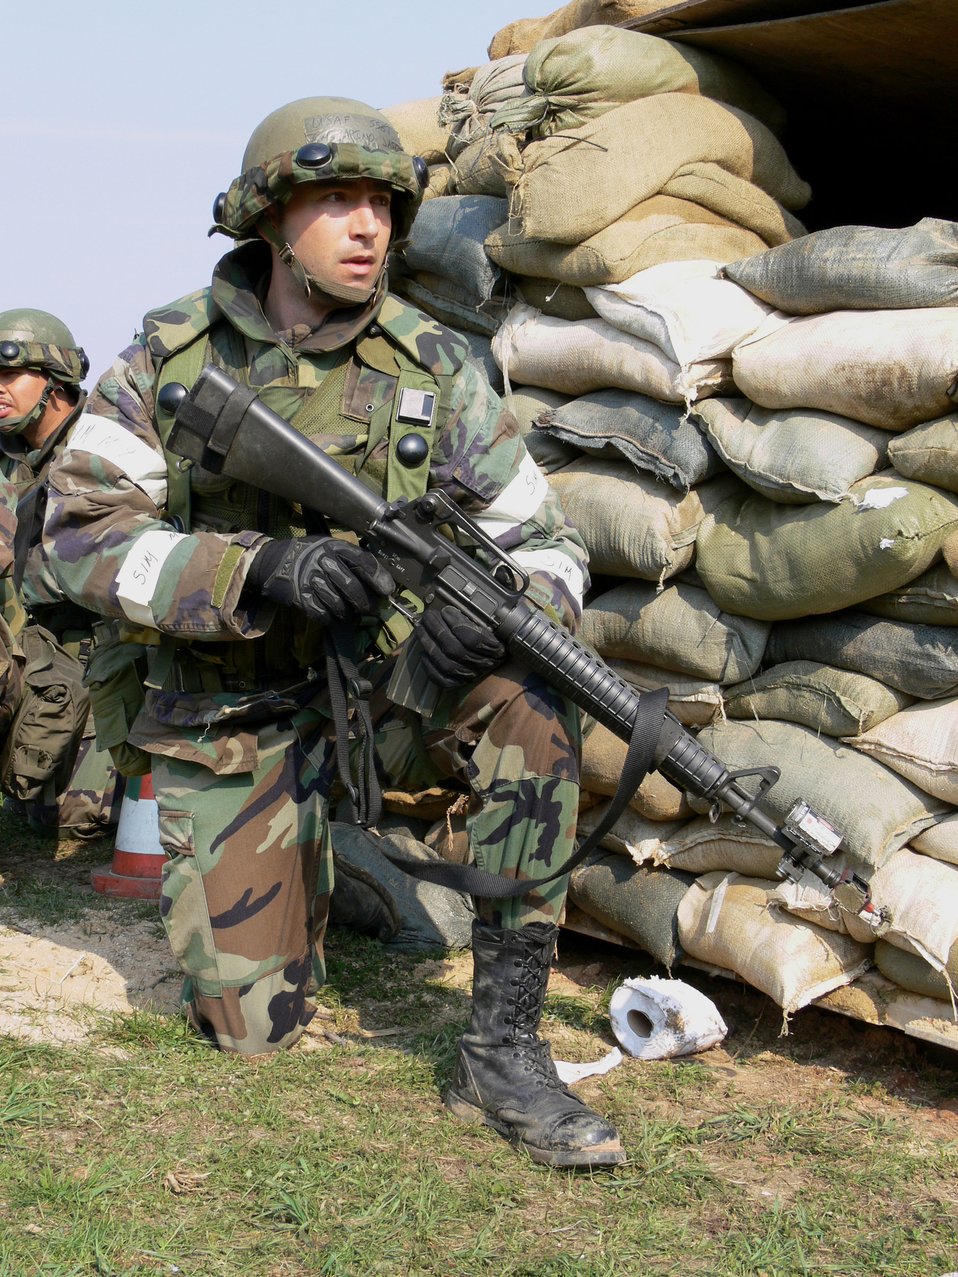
Combat comm Airmen hone skills in field training

Staff Sgt. Jason Garbarino prepares to assault after insurgents gained entry onto their exercise base in Bitburg, Germany. This field training teaches members of the 1st Combat Communication team how to handle war-like situations in a training environment. Sergeant Garbarino is a 1st CC maintainer.